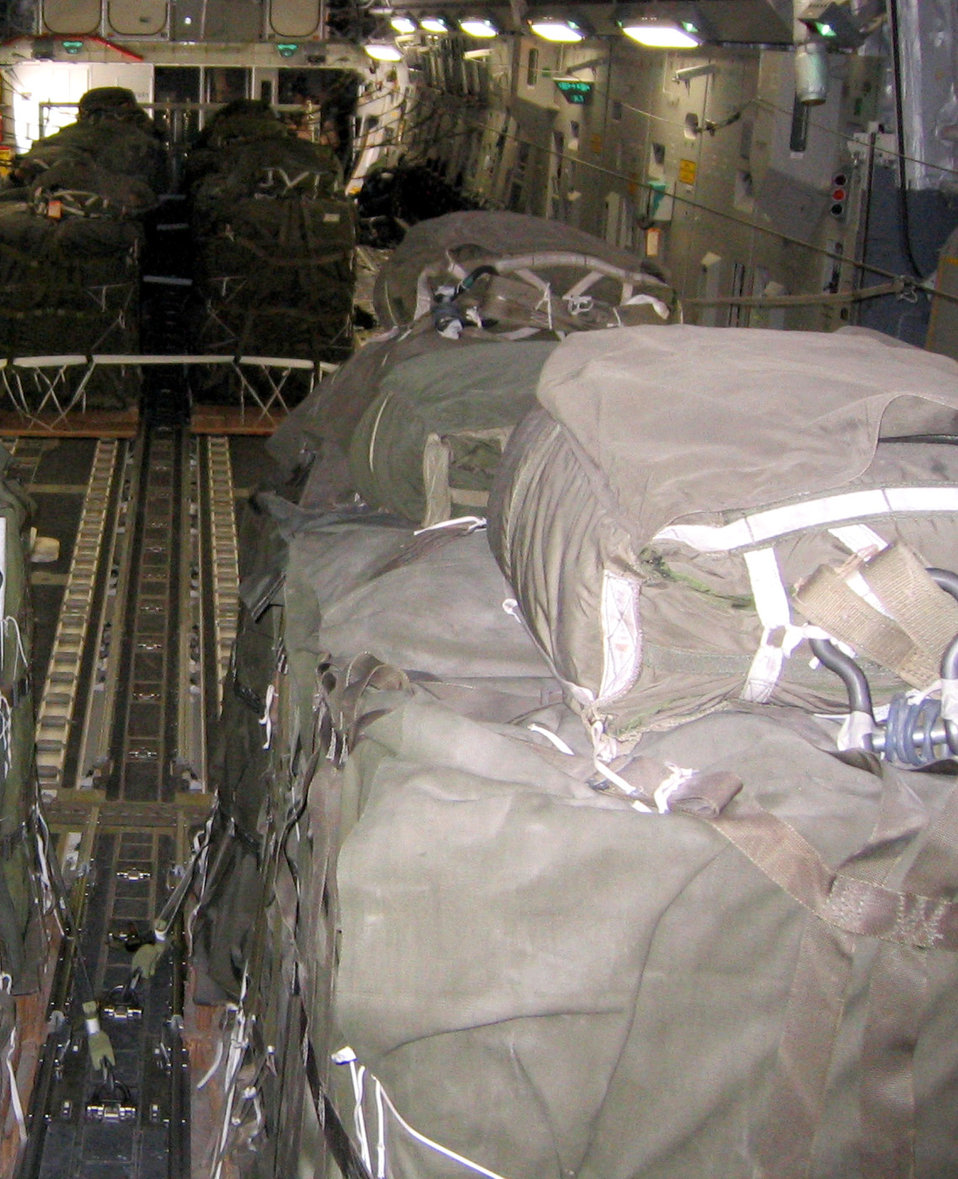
Single C-17 sets airdrop record

Pallets of humanitarian aid sit aboard an Air Force C-17 Globemaster III that airdropped 32,400 pounds of humanitarian aid within 40 minutes to four locations in central and eastern Afghanistan Thursday, March 16, 2006. The C-17 and accompanying aircrew are deployed to the 379th Air Expeditionary Wing at a forward-deployed location from McChord Air Force Base, Wash.